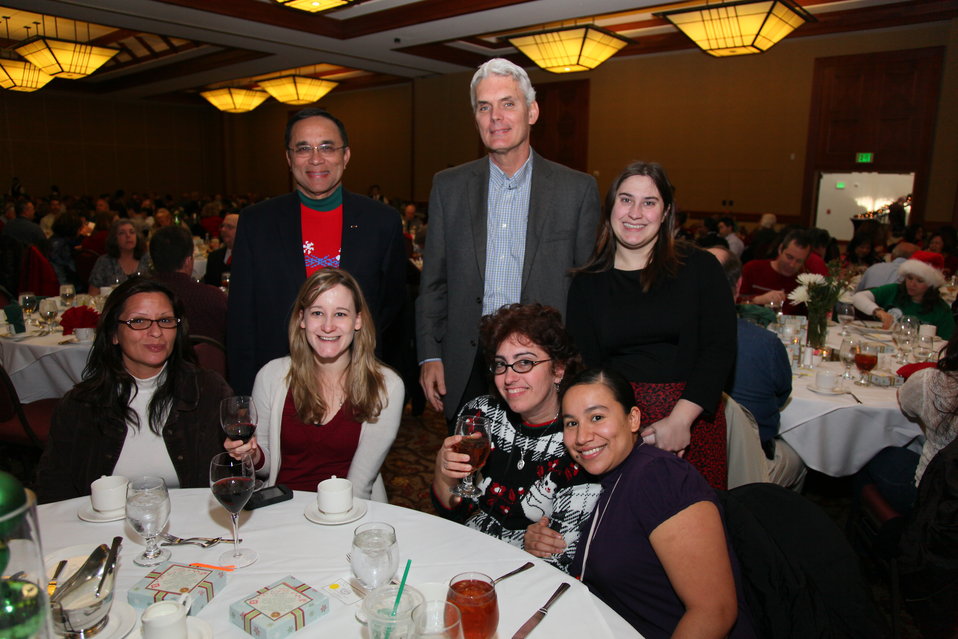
Sacramento District Holiday Party 2011